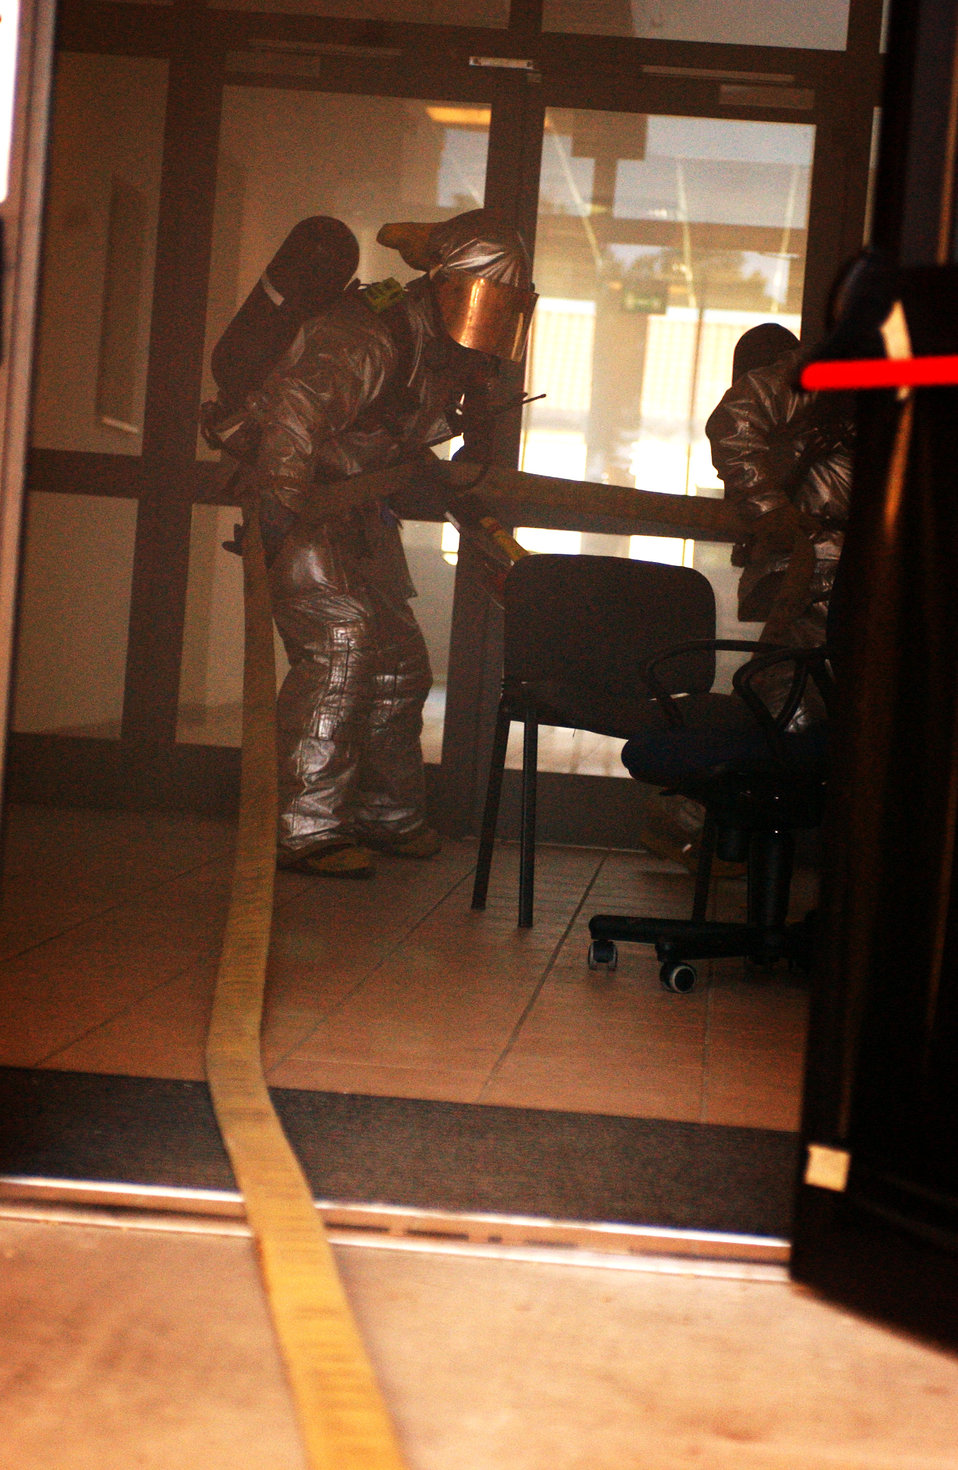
Exercise response

A firefighter brings a water hose into a building during a local Salty Nation exercise at Aviano Air Base, Italy, on Tuesday, June 6, 2006. The firefighter is with the 31st Fighter Wing here. The exercise runs through June 9.